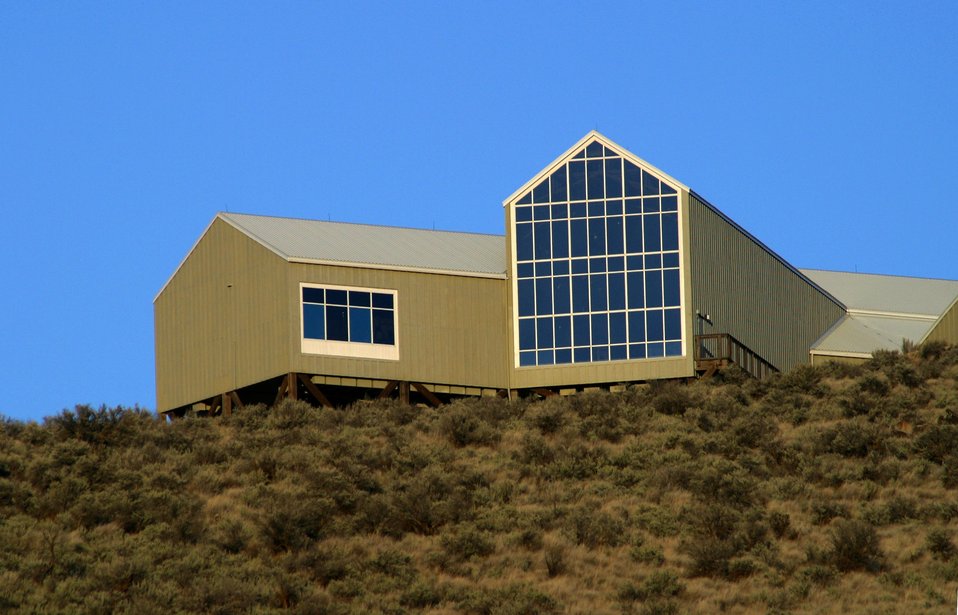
Early evening view of the NHOTIC from the Oregon Trail just below the Center.